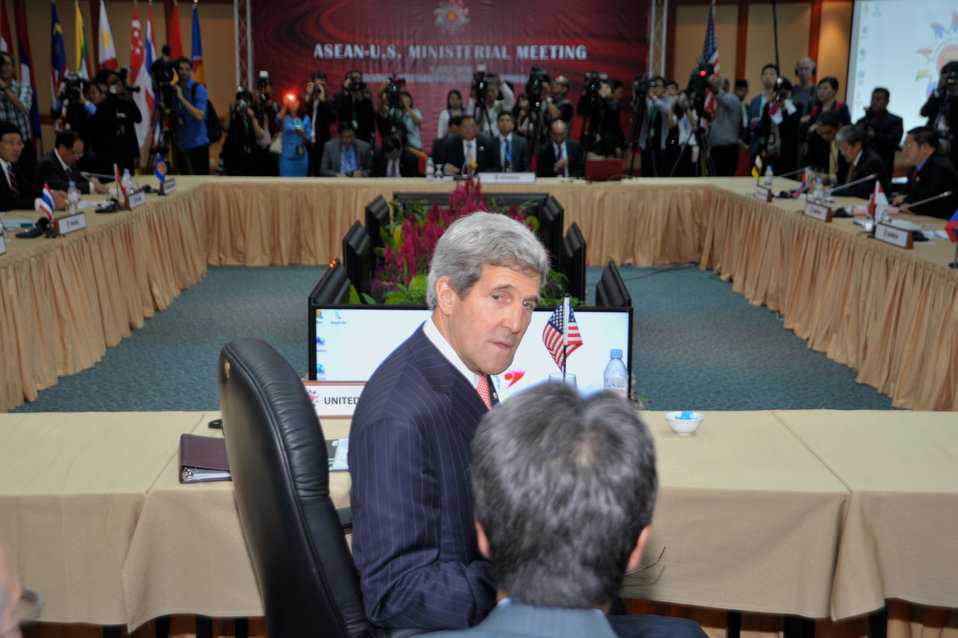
Secretary Kerry Addresses the ASEAN Ministerial Meeting

U.S. Secretary of State John Kerry consults Acting Assistant Secretary for East Asia Pacific Joseph Yun before addressing his fellow foreign ministers during an ASEAN ministerial meeting in Bandar Seri Bagawan, Brunei Darussalam, on July 1, 2013.